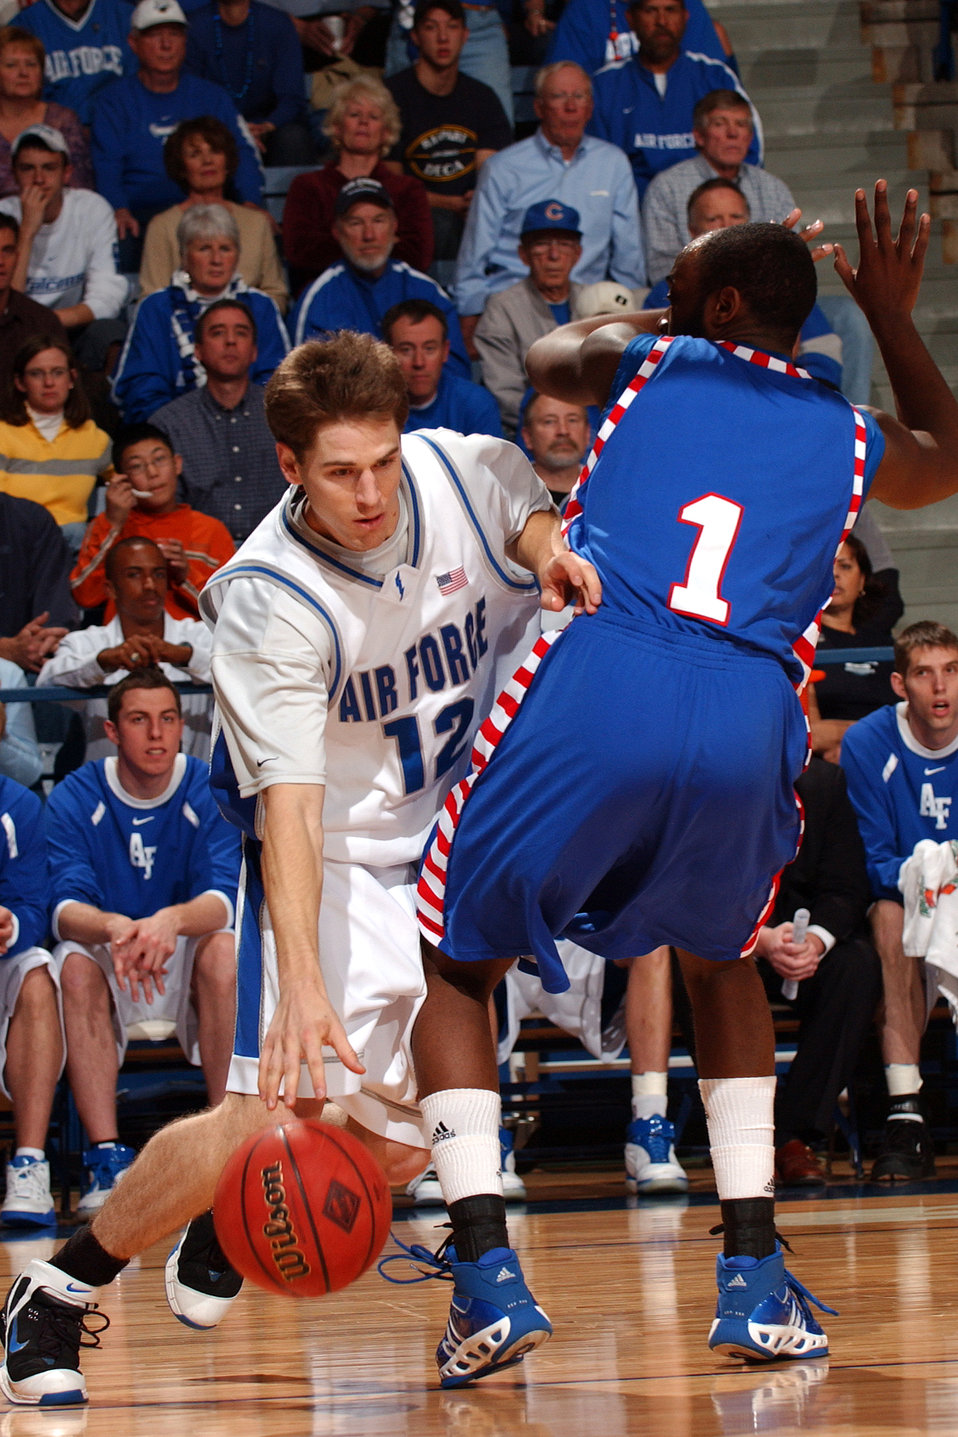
Falcons reach NIT final four in NYC

Falcon guard Tim Anderson looks for room past DePaul's Jabari Currie March 21 at Clune Arena. Anderson made two key steals in Air Force's 52-51 win for a berth in the NIT semifinals in New York City's Madison Square Garden March 27 against Clemson.